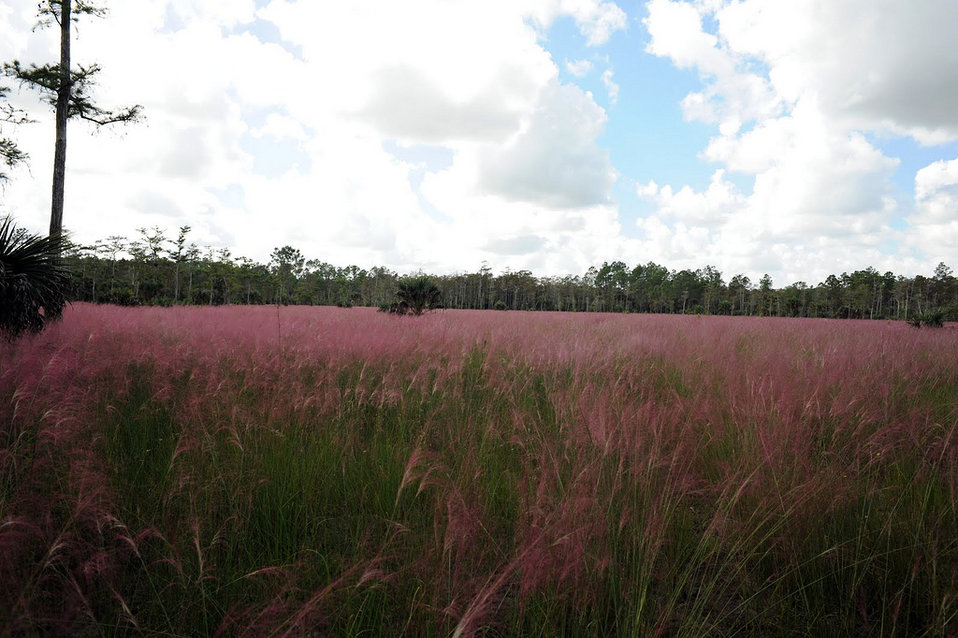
muhlenbergia (muhly grass)

Panther Swamp National Wildlife Refuge, MS